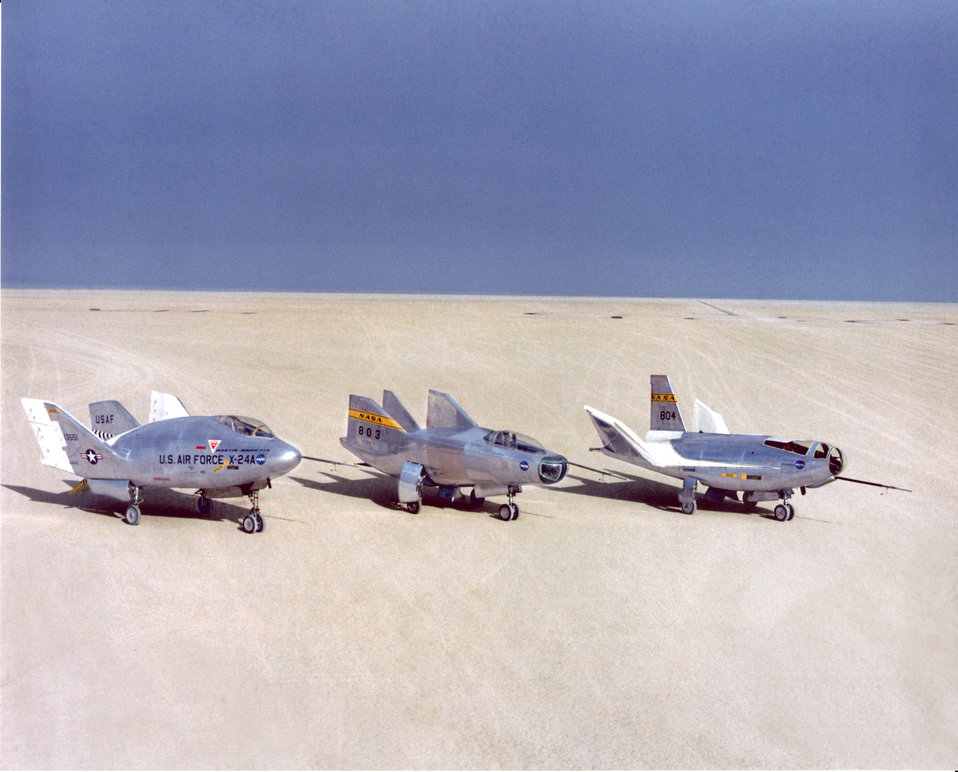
Lifting Bodies: X-24A, M2-F3 and HL-10.